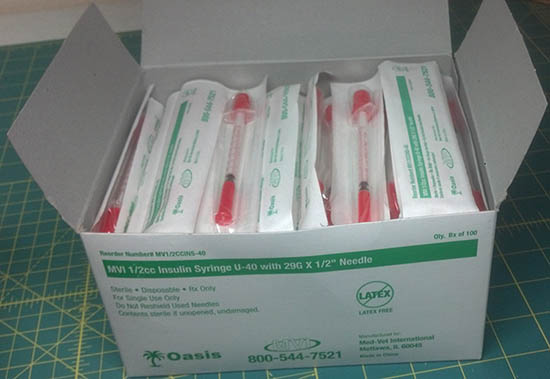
RECALLED – Insulin syringes

February 20, 2014 – Product Recall – Med-Vet International Issues Nationwide Recall of Veterinary 1/2cc U-40 Insulin Syringes Due to Mismarked Syringe Barrels.